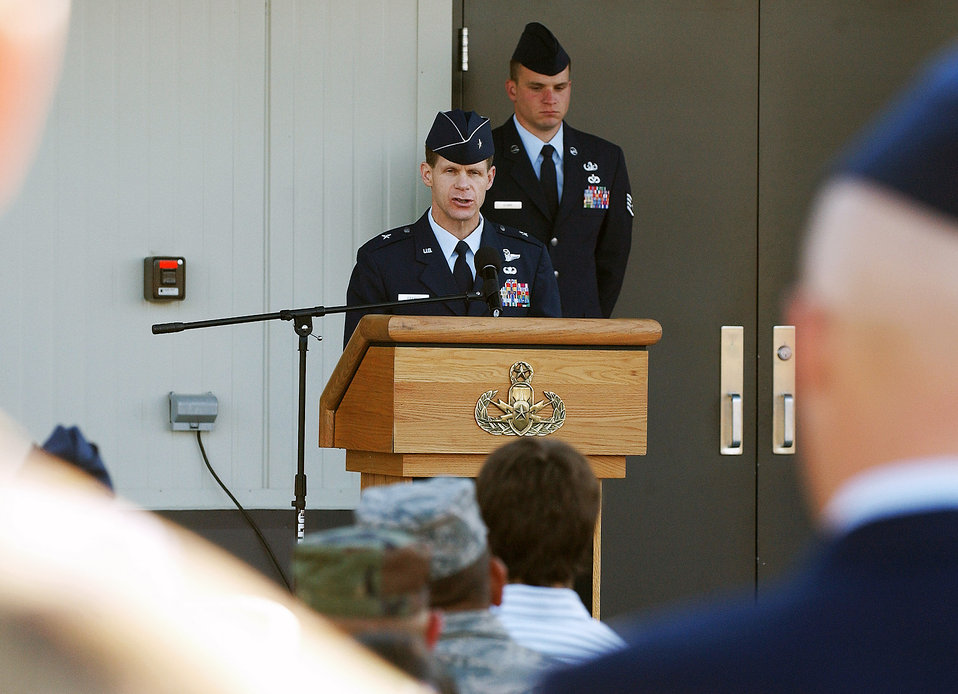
Fallen EOD Airman dedication ceremony

Brig. Gen. Mark Graper, 354th Fighter Wing commander, speaks during a memorial dedication ceremony in honor of Master Sgt. Brad Clemmons, 354th Civil Engineer Squadron explosive ordnance disposal flight, Aug. 21, 2008, at Eielson Air Force Base, Alaska. Sergeant Clemmon's family, friends and co-workers attended the building dedication ceremony to honor his ultimate sacrifice.